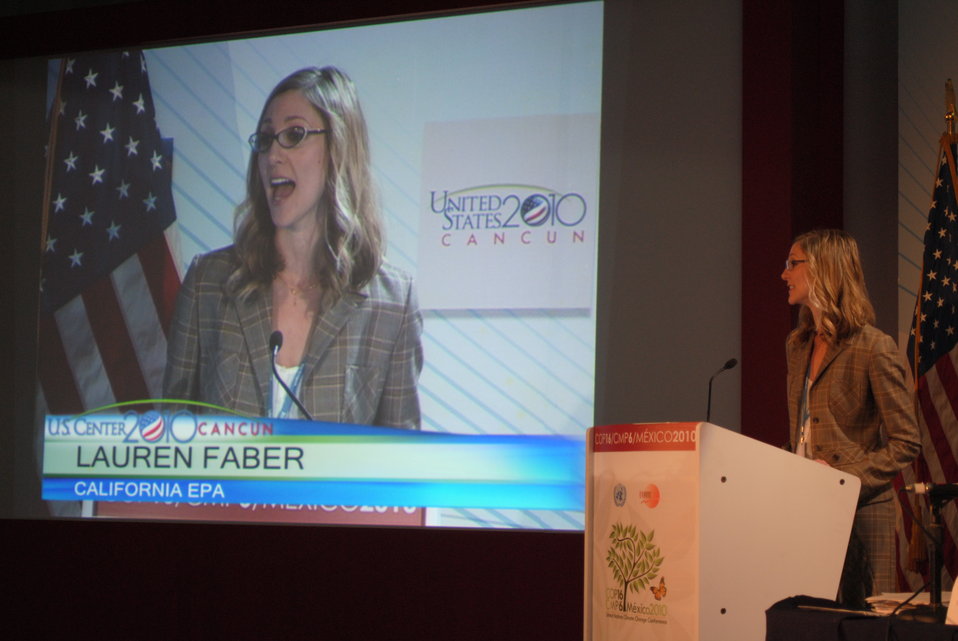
California EPA's Lauren Faber Addresses the U.S. Center